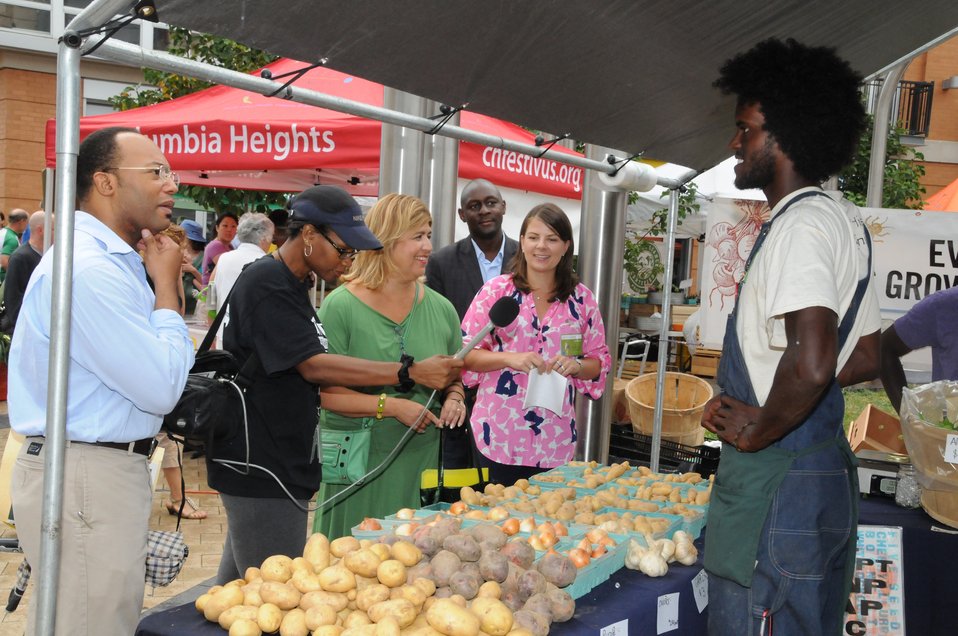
Five Seed Farms Farm Manager Blaine Snipstall

AMS Administrator, Anne Alonzo (center), talks with Five Seed Farms manager, Blaine Snipstall, at the Columbia Heights Community Marketplace.